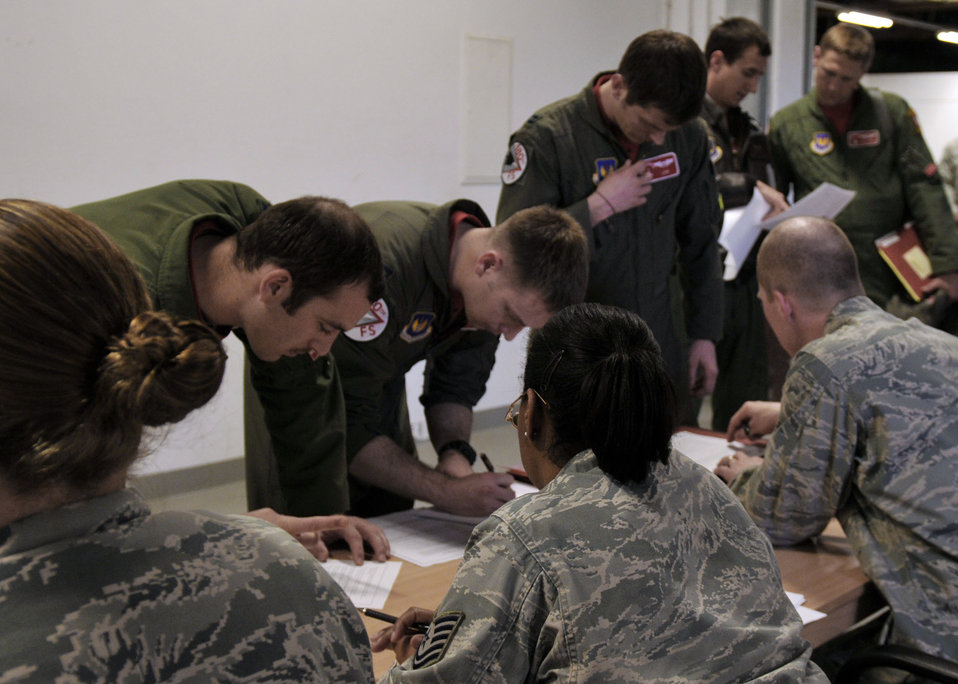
Operation Odyssey Dawn

SPANGDAHLEM AIR BASE, Germany? Pilots from the 480th Fighter Squadron process through the Personnel Deployment Function line in preparation of Operation Odyssey Dawn March 18. Joint Task Force Odyssey Dawn is the U.S. Africa Command task force established to provide operational and tactical command and control of U.S. military forces supporting the international response to the unrest in Libya and enforcement of United Nations Security Council Resolution (UNSCR) 1973. UNSCR 1973 authorizes all necessary measures to protect civilians in Libya under threat of attack by Qadhafi regime forces. JTF Odyssey Dawn is commanded by U.S. Navy Admiral Samuel J. Locklear, III.